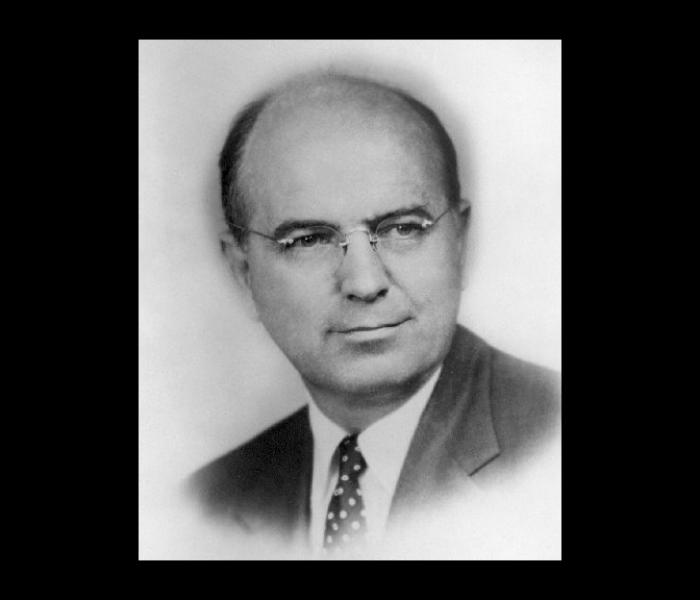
Dr. Alexander Langmuir.